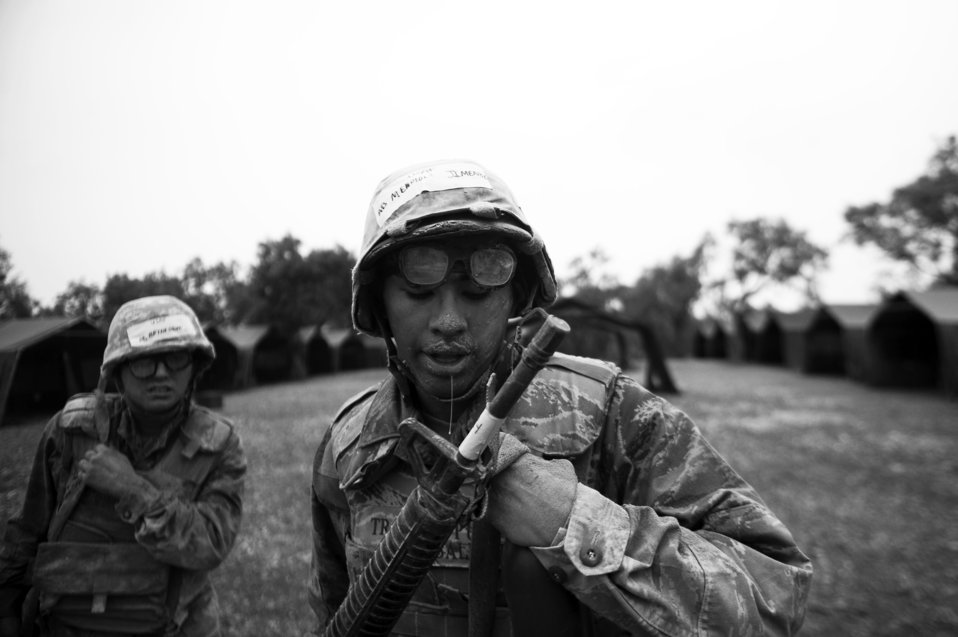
BEAST

Basic trainees go through their sixth week of Air Force basic military training at the Basic Expeditionary Airman Skills Training on May 25, 2011, at Lackland Air Force Base, Texas.